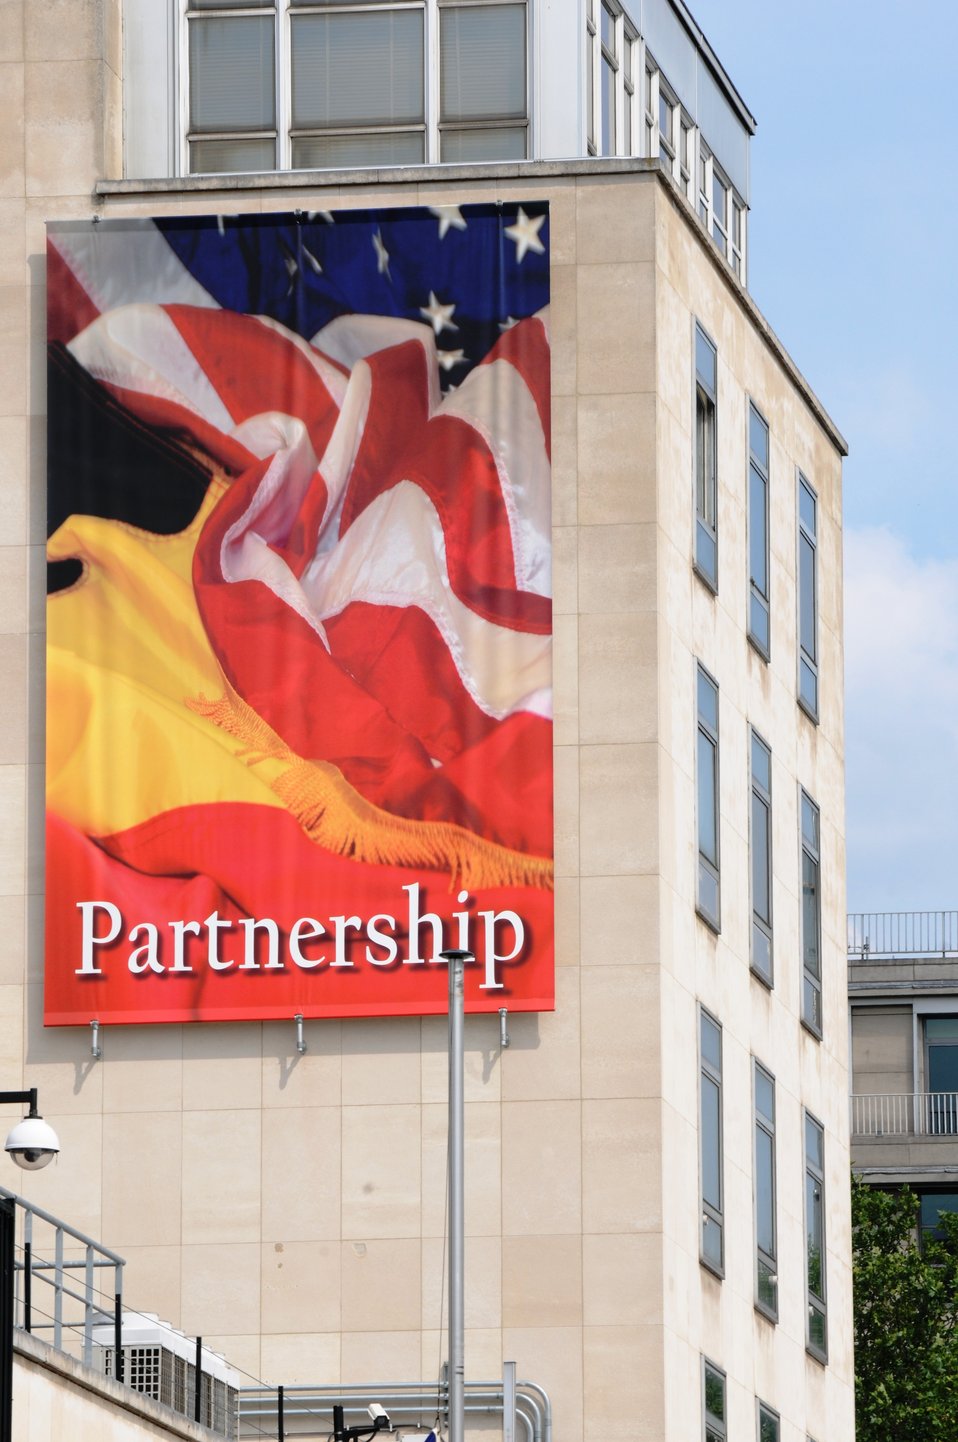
July 4th Celebration at U.S. Embassy in Belgium

U.S. Embassy Brussels celebrates the America's Independence Day on July 1, 2010, in Brussels, Belgium.